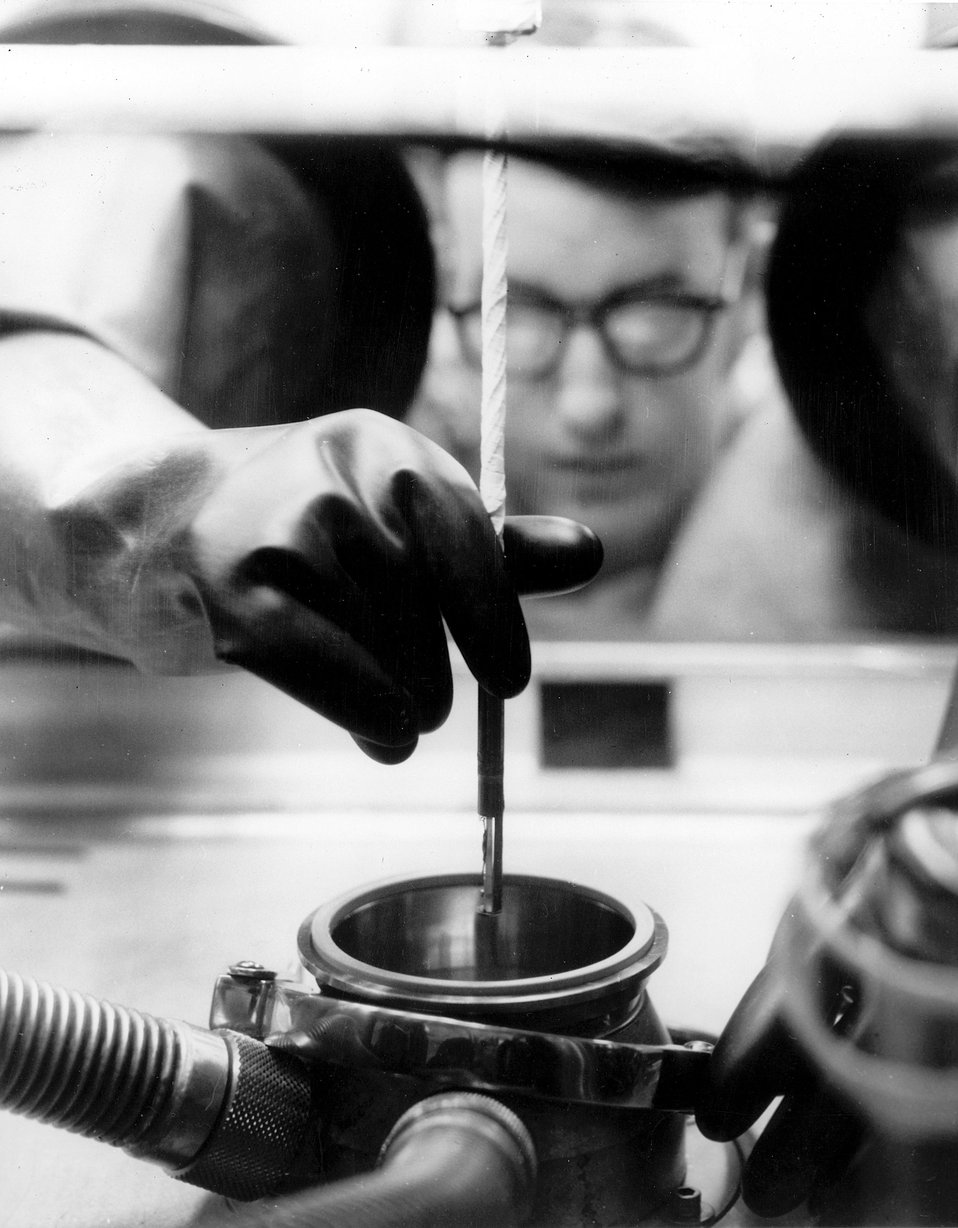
A plutonium sample holder being lowered into cryogenic equipment within a glovebox for electrical transitivity measurements between room temp and -270 degrees C
c.1971